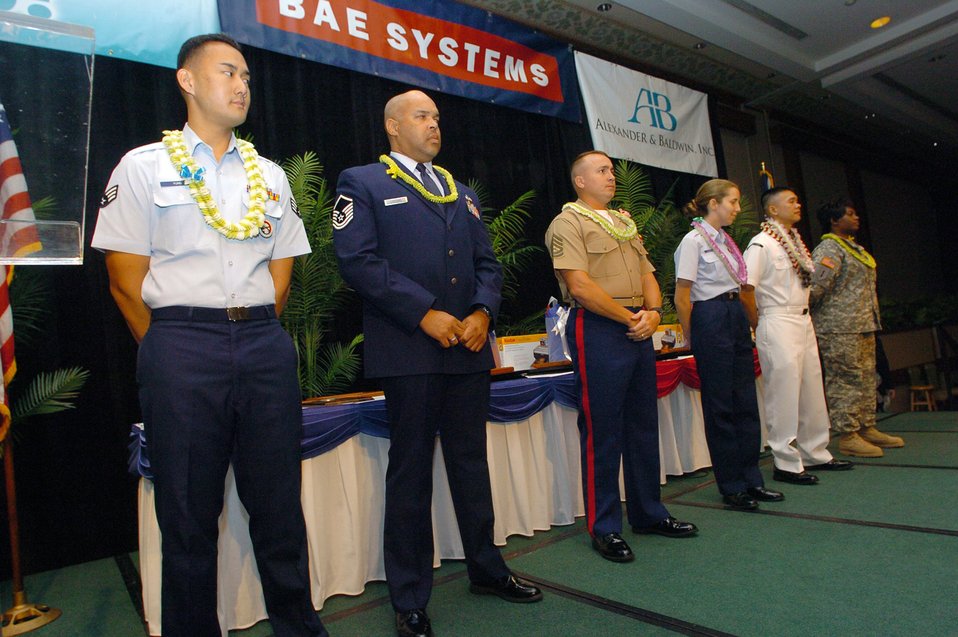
Hawaii honors servicemembers

Members from each branch of service were presented a Community Service Award for Excellence in Community Outreach by the Honolulu Chamber of Commerce at the 22nd Annual Military Appreciation Month Luncheon May 24 at the Hilton Hawaiian Village in Honolulu. Members are (left to right) Hawaii Air National Guard Senior Airman Ryan Young, Master Sgt. Thomas Yaron, Marine Corps Staff Sgt. Crystal Havey, Coast Guard Petty Officer 1st Class Elizabeth Yeager, Navy Petty Officer Diem Ngo and Army Sgt. 1st Class Sharlinda Warner.